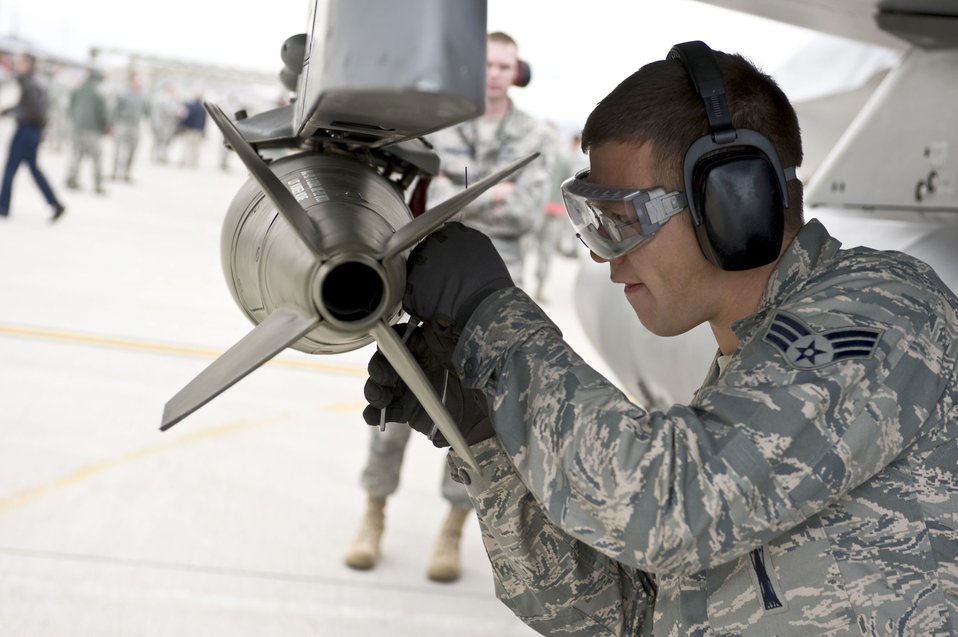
Loading to win

Senior Airman Lucas Wolf loads a bomb onto an F-16 Fighting Falcon April 8, 2011, at Nellis Air Force Base, Nev., during a quarterly weapons load competition. Airman Wolf is a load-crew member assigned to the 57th Aircraft Maintenance Squadron.